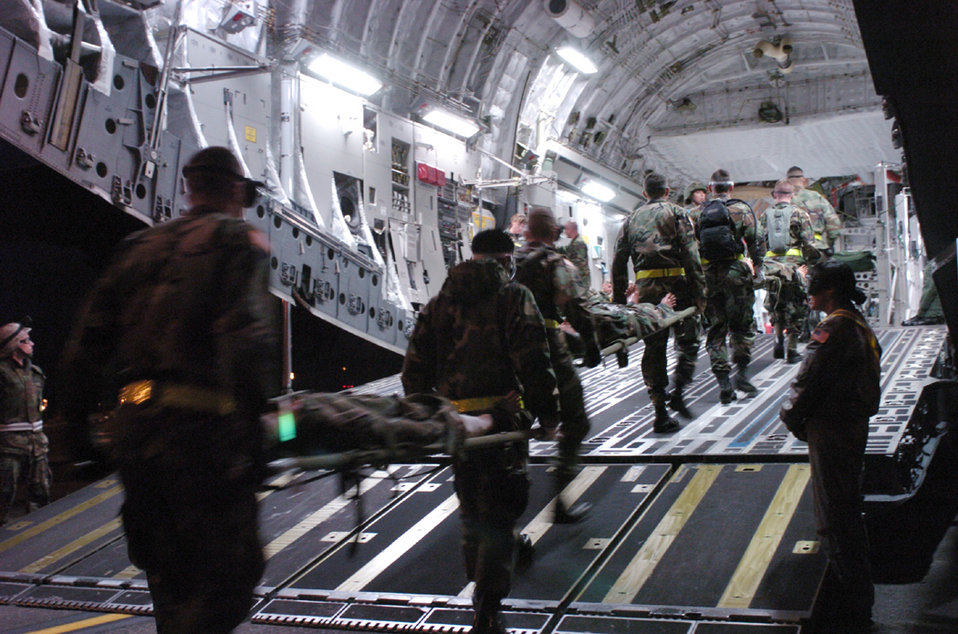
A day at the Rodeo

MCCHORD AIR FORCE BASE, Wash. -- Soldiers from nearby Fort Lewis carry mannequins with simulated battle wounds onto a C-17 Globemaster III here June 21 during Rodeo 2005. Aerial medical evacuation crews were graded on several scenarios during the flight.